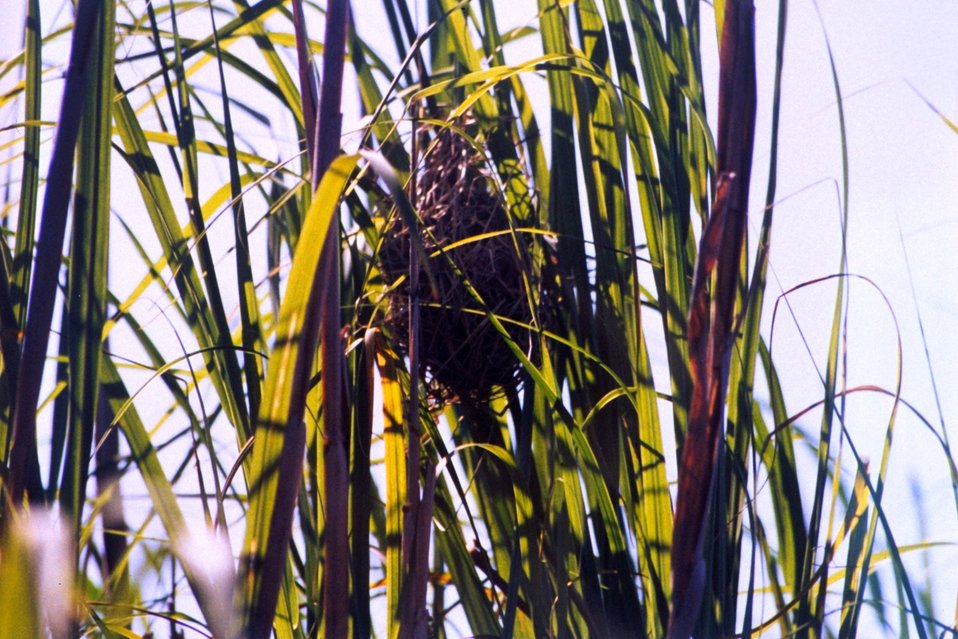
Bird nest, possibly built by a marsh wren, attached to marsh grass.